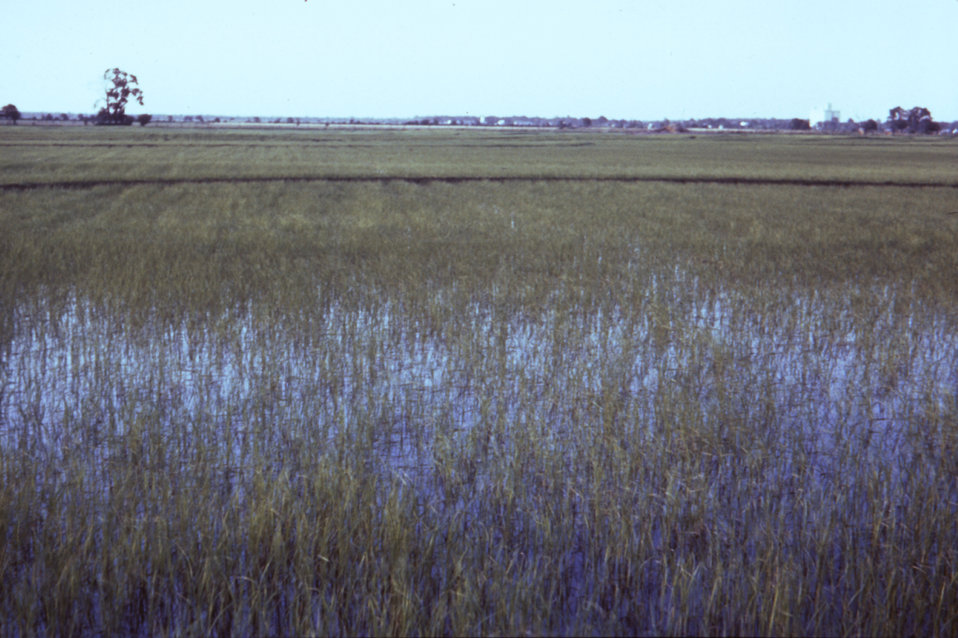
This is a 1976 photograph showing standing water within a rice field during the early growth stage of this crop.